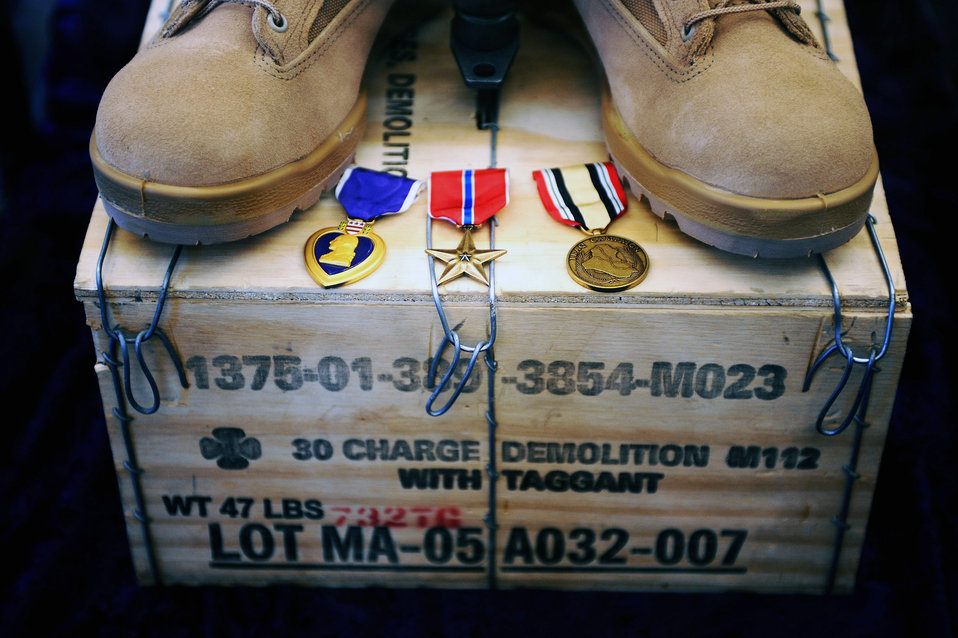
Fallen EOD Airman dedication ceremony

A purple heart, bronze star and Iraqi campaign medals are placed at the front of the boots on Master Sgt. Brad Clemmons, 354th Civil Engineer Squadron explosive ordnance disposal flight, memorial Aug. 21, at Eielson Air Force Base, Alaska. Sergeant Clemmons family, friends and co-workers attended the building dedication ceremony to honor his ultimate sacrifice.